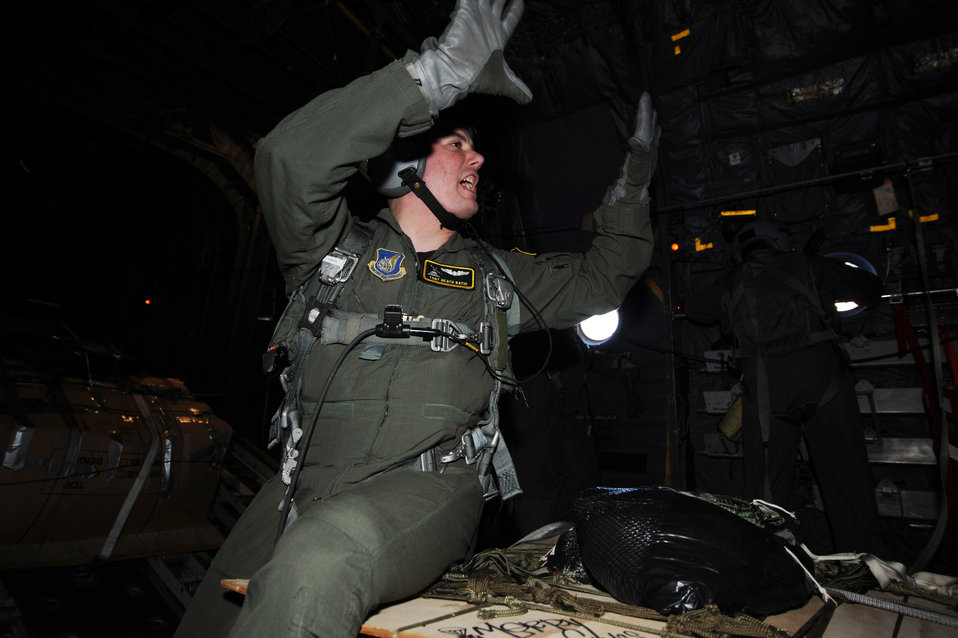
Operation Christmas Drop

Tech. Sgt. Heath Bahyi signals to the crew that a drop zone is 10 minutes out during Operation Christmas Drop Dec.19 over the Pacific Ocean. Airmen today continue the tradition of delivering supplies to remote islands of the Commonwealth of the Northern Marianas Islands, Yap, Palau, Chuuk and Pohnpei. Through military and local community support, Operation Christmas Drop has collected tens of thousands of donated items and raised more than $30,000 in support of the operation. Sergeant. Bahyi is a loadmaster from the 36th Airlift Squadron from Yokota Air Base, Japan.